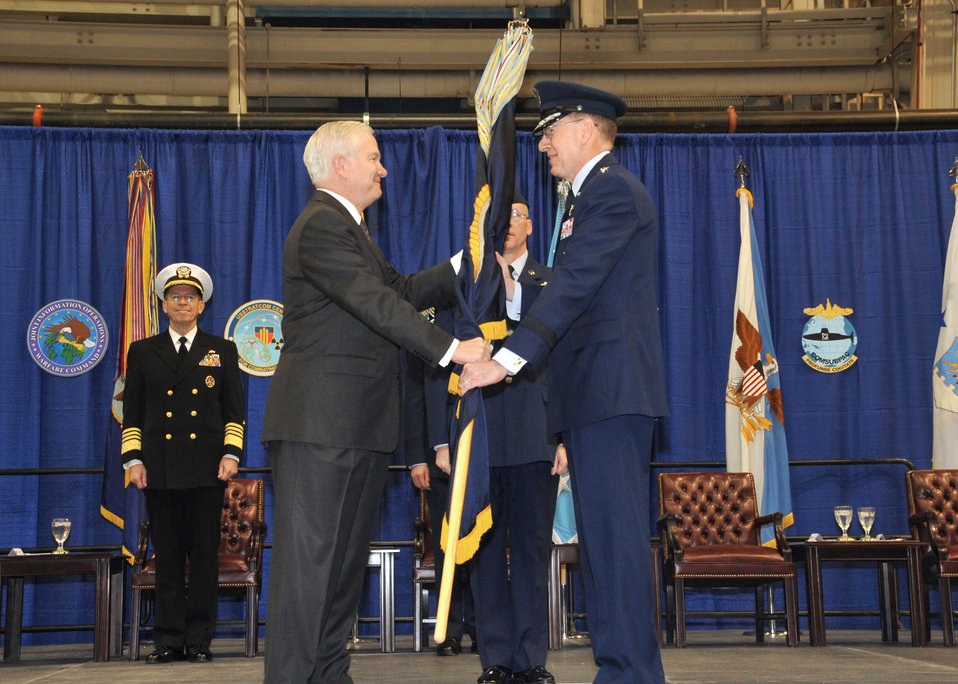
STRATCOM change of command

Secretary of Defense Robert Gates presents the U.S. Strategic Command flag to Gen. C. Robert Kehler during the change-of-command ceremony Jan. 28, 2011, at Offutt, Air Force Base, Neb., as Adm. Mike Mullen, chairman of the Joint Chiefs of Staff looks on. General Kehler was taking command from Gen. Kevin P. Chilton who retired following the change of command.